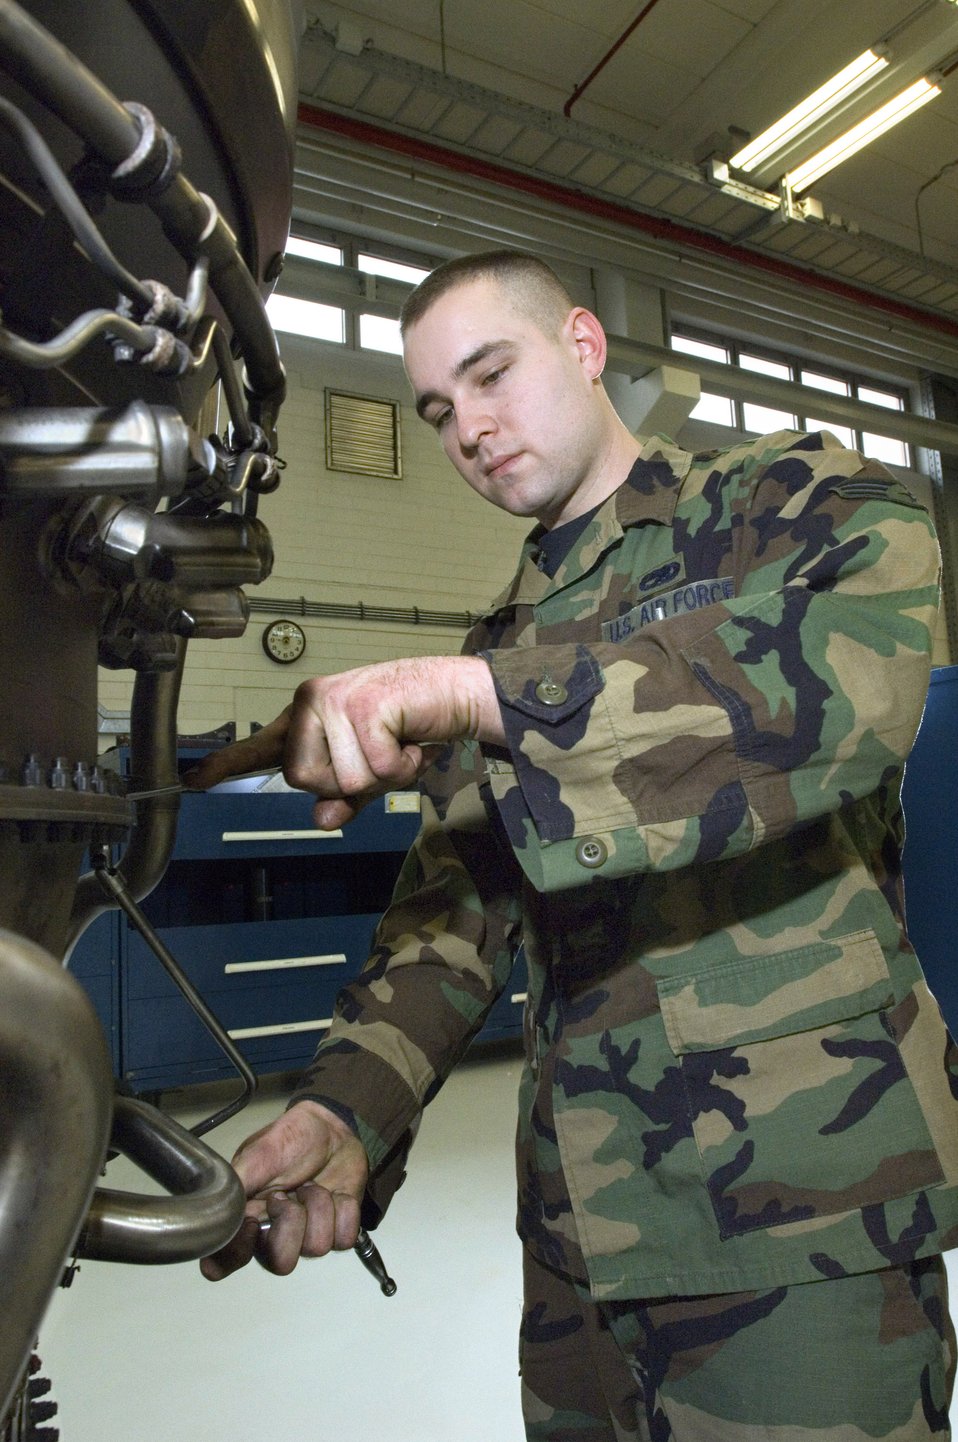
Spangdahlem mechanics fix jet engines 'on the line'

Senior Airman Ronald Craven works on an F-16 Fighting Falcon jet engine at Spangdahlem Air Base, Germany, on Friday, March 24, 2006. Airman Craven, of Long Beach, Calif., is a jet engine mechanic with the 52nd Component Maintenance Squadron's propulsion flight.